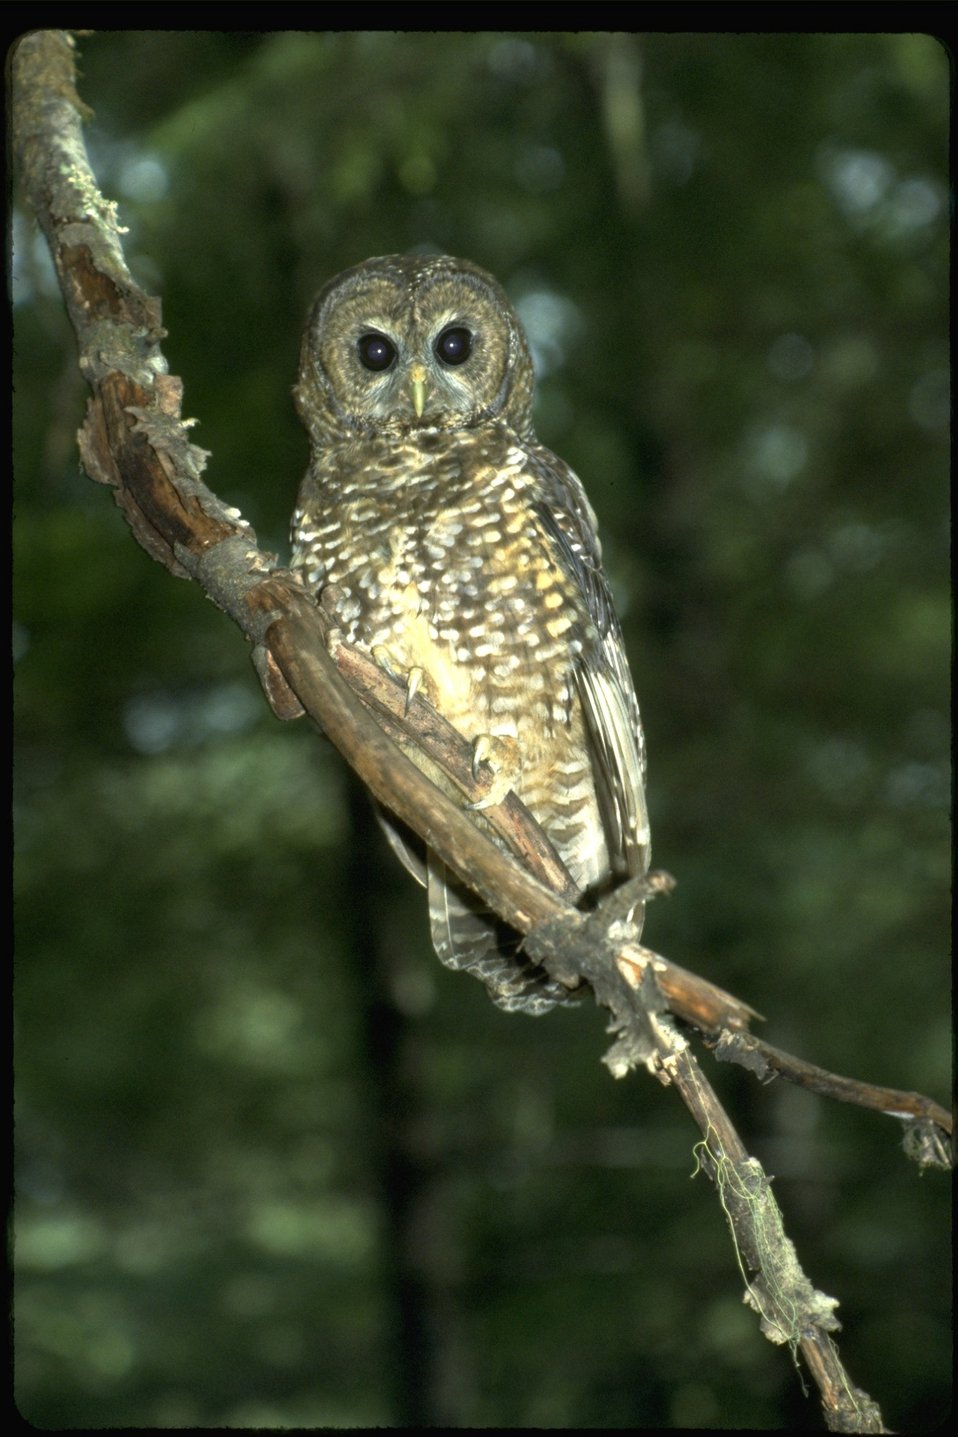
Closeup of Northern Spotted Owl in tree.